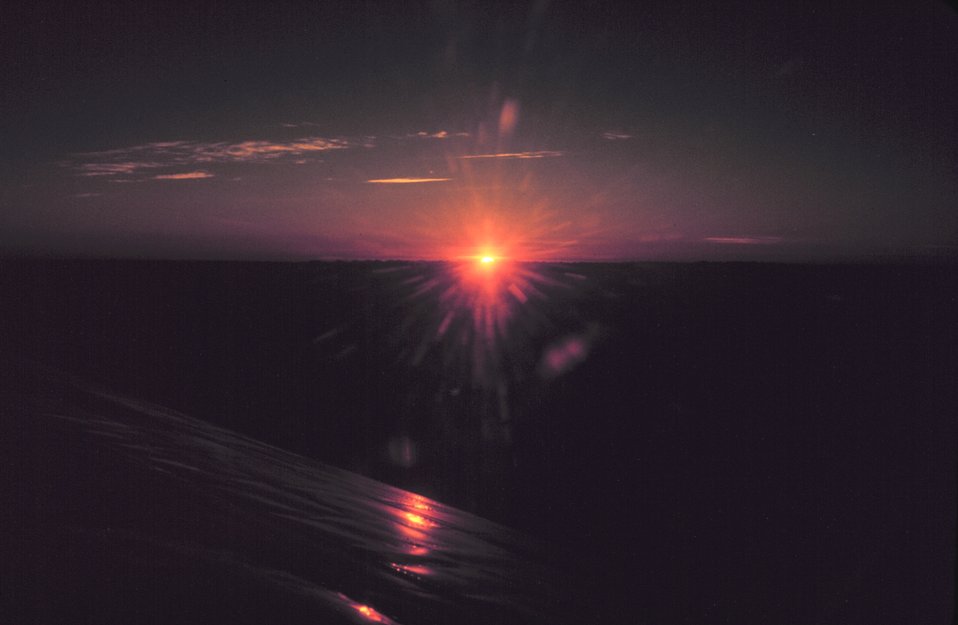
A brilliant red sunset reflecting off the frozen tundra